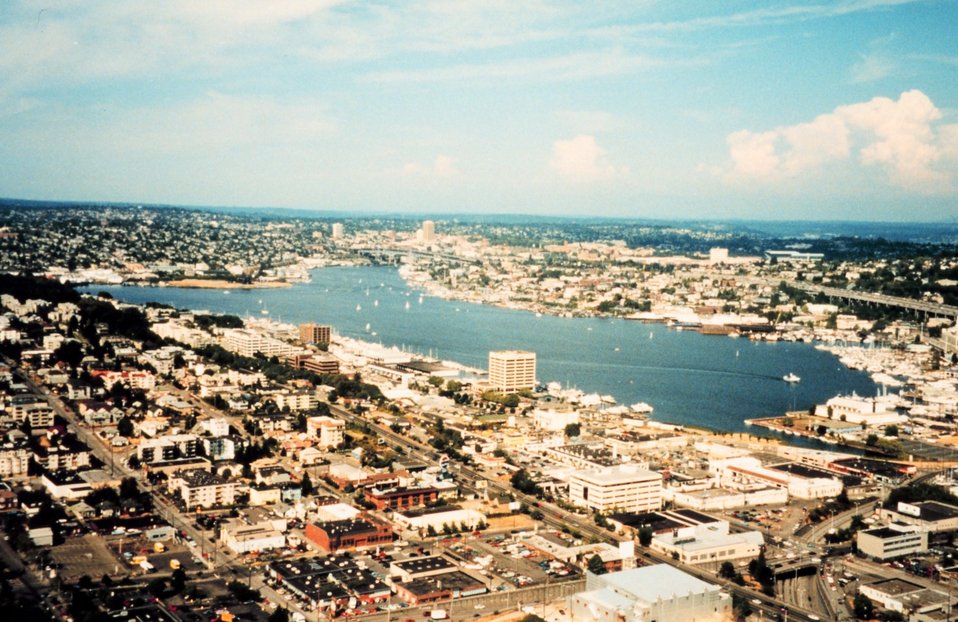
Lake Union from the Space Needle